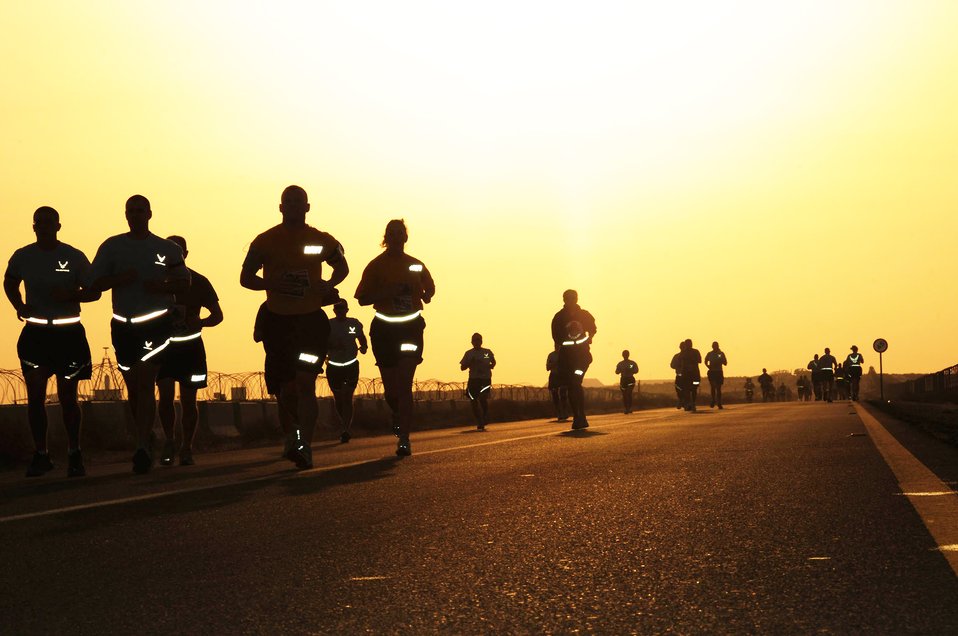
Running at dawn

More than 175 Airmen, sister service members and coalition partners participated in the 386th Air Expeditionary Wing Run for the Fallen Veterans Day 10K at an air base in Southwest Asia Nov. 11, 2009.